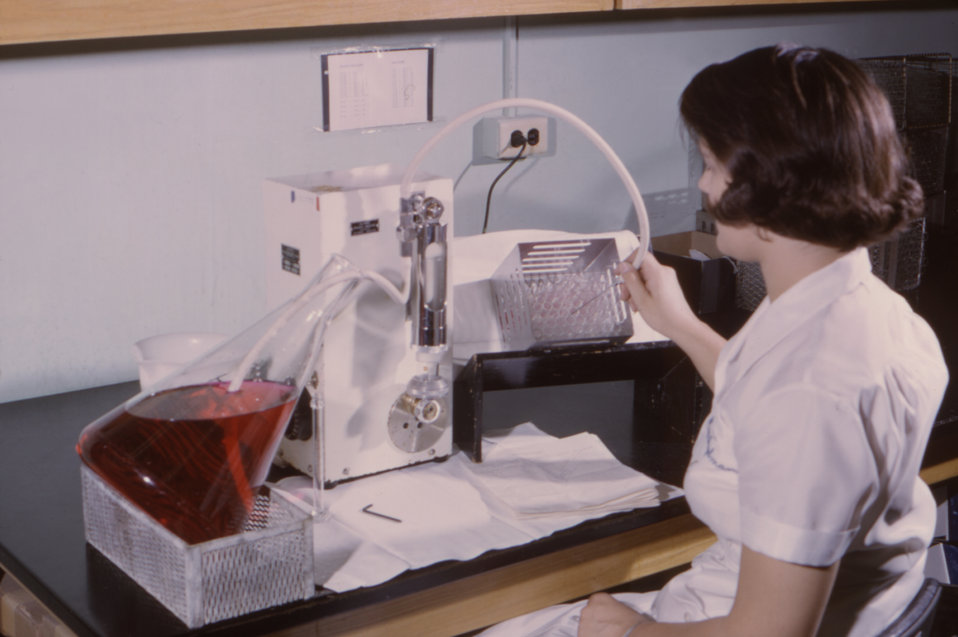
This historic 1965 image depicted a Centers for Disease Control's laboratory technician as she was operating an automatic dispenser used in the dispensing of growth media.